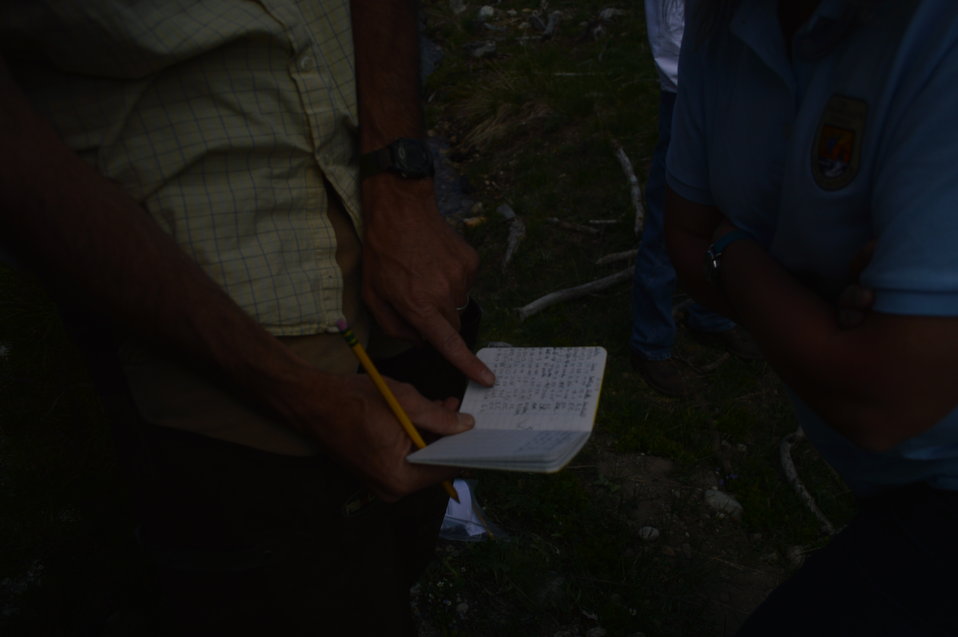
Regional Leadership Visit to Montana 2014